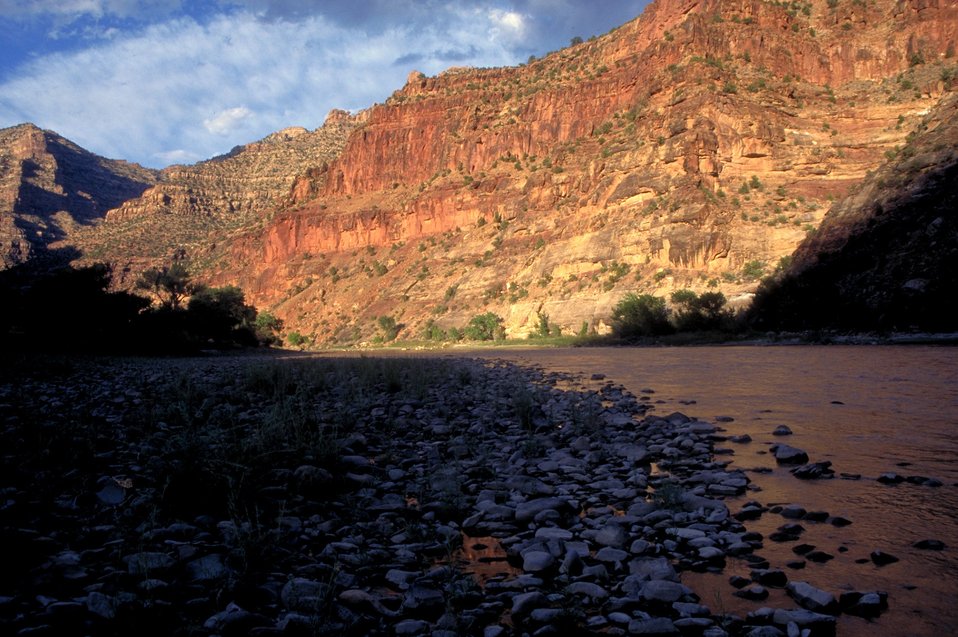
Desolation/Gray Canyons near Price, Utah.